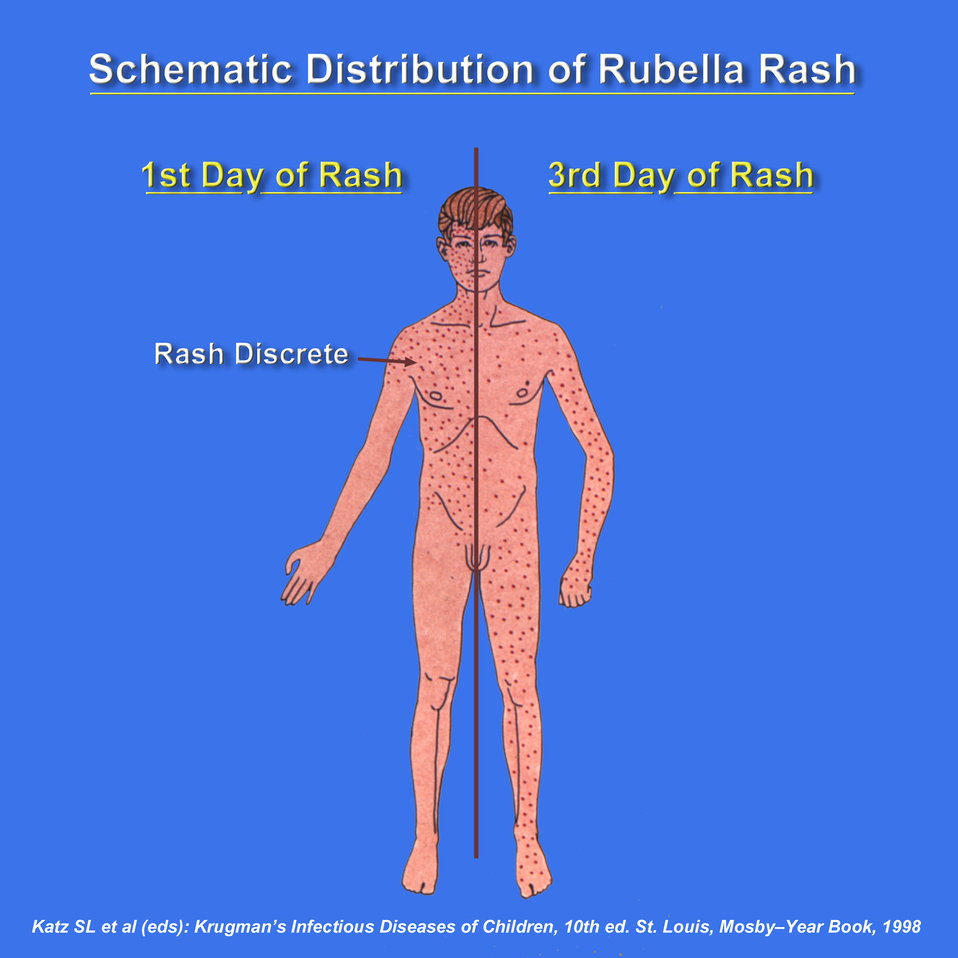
This schematic diagram from the book, 'Krugman's Infectious Diseases of Children', by Katz, SL, et. al. (eds), 10th ed. St. Louis, Mosby-Year Book, 1998, depicts the classic distribution pattern of a rubella rash on the human body. The first day of the rash distribution is seen on the right side of this generic human male figure, while the distribution manifested by the third day can been seen on the figure's left side.